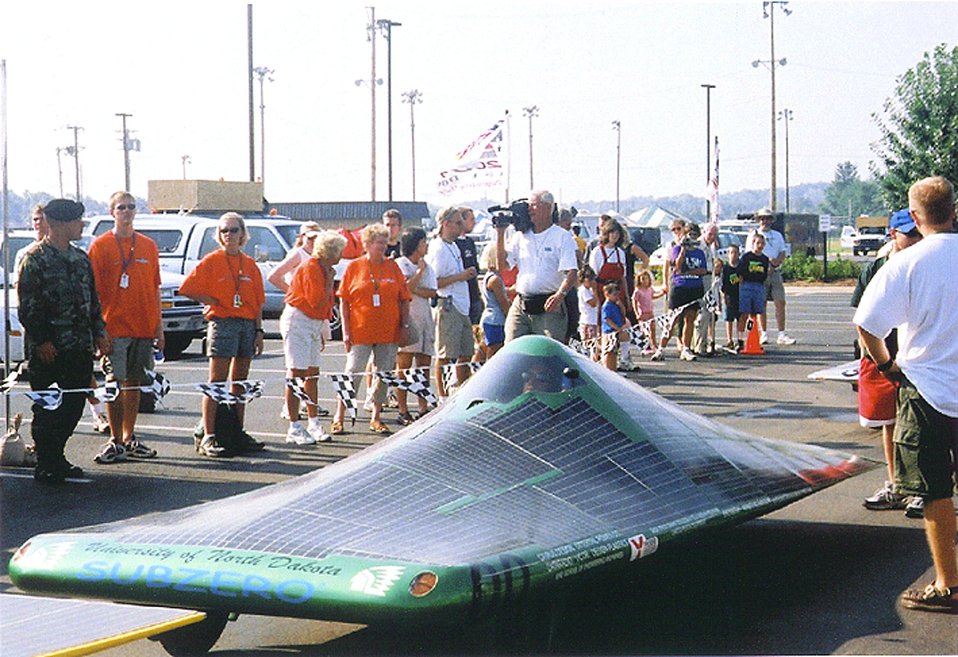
THE SOLAR CAR ENTRY FROM UNIVERSITY OF NORTH DAKOTA IN SOLAR CHALLENGE 2001.

THE AMERICAN SOLAR CHALLENGE (SUNRAYCE) 2001, THE LONGEST SOLAR CAR RACE IN THE WORLD, IS A BIENNIAL EDUCATIONAL SPORTING EVENT IN WHICH UNIVERSITY TEAMS, COMPANIES, AND CLUBS FROM AROUND THE WORLD COMPETE TO BUILD AND RACE SOLAR POWERED CARS ACROSS THE UNITED STATES. THIS YEAR THE RACE BEGAN IN CHICAGO, ILLINOIS ON JULY 15, 2001 AND WAS COMPLETED ON JULY 25, 2001 IN CLAREMONT, CALIFORNIA, TRAVELING ALL ALONG OLD ROUTE 66.